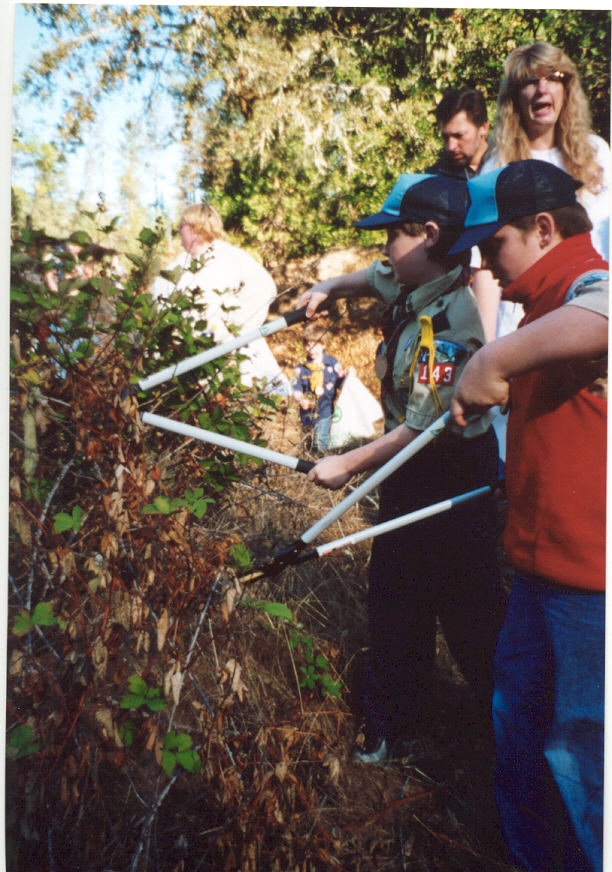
Boy Scouts cutting himalayn blackberries at Clear Creek Recreation site.